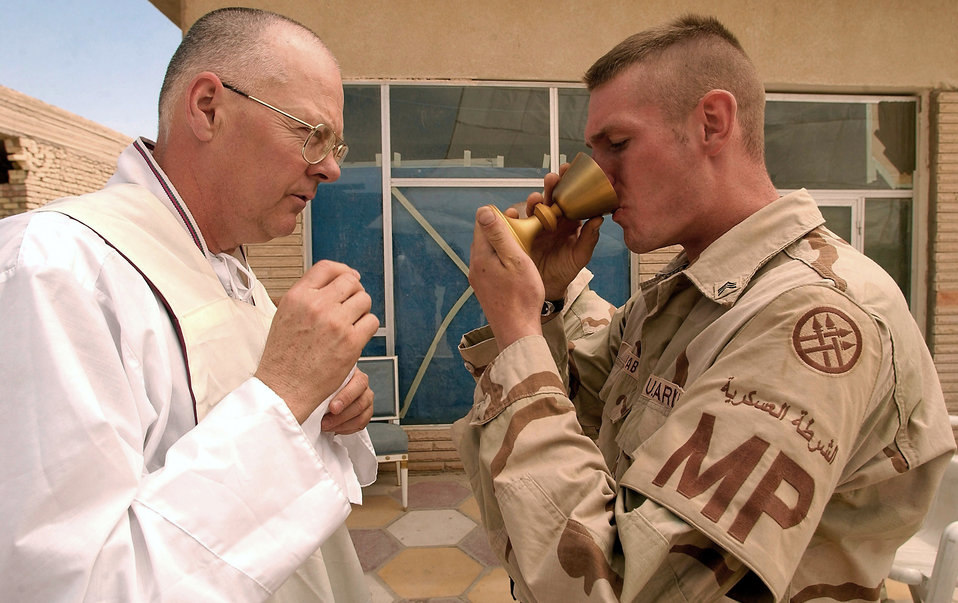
Desert communion

OPERATION IRAQI FREEDOM -- Father (Maj.) David Fitz-Patrick, Air Force Catholic Chaplain, helps Army Sgt. Casey Schwab, a military police officer with the 300th Military Police Company from Fort Riley, Kan., take communion during a mass service on May 13, 2003. Fitz-Patrick provided Army members deployed to Convoy Supply Center Scania, Iraq with their first Mass service since early March. Fitz-Patrick is deployed from the 1st Fighter Wing at Langley Air Force Base, Va.